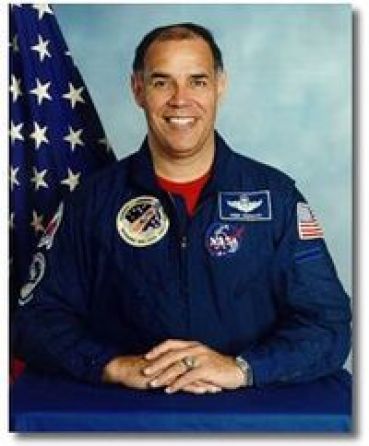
Col. Frederick Gregory: From rescue pilot to shuttle commander